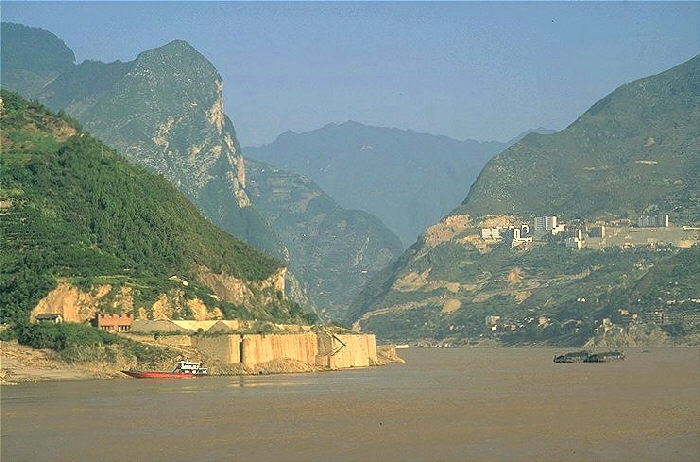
Yangtze River, Three Gorges section.